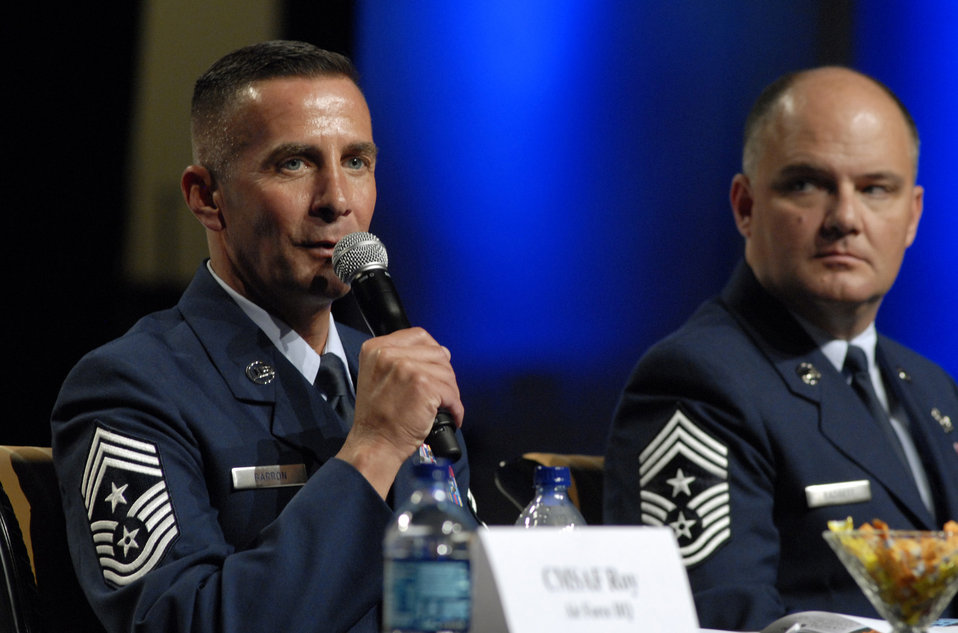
Senior Air Force enlisted officials address Airmen's concerns

Chief Master Sgt. Joseph Barron addresses conference attendees during the Chief's Forum at the 2009 Air Force Association Air & Space Conference and Technology Exposition Sept. 15, 2009, in Washington, D.C. During the event the command chief panel discussed